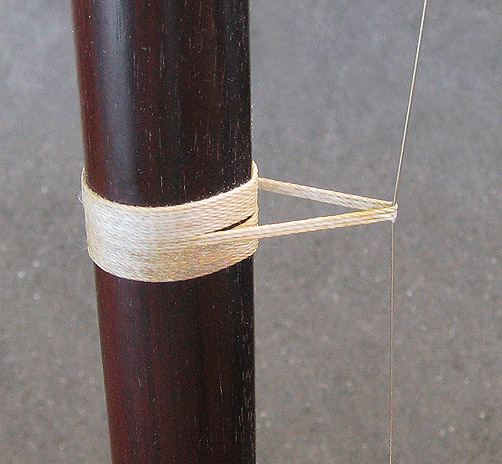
Picture showing 'qianjin' on erhu